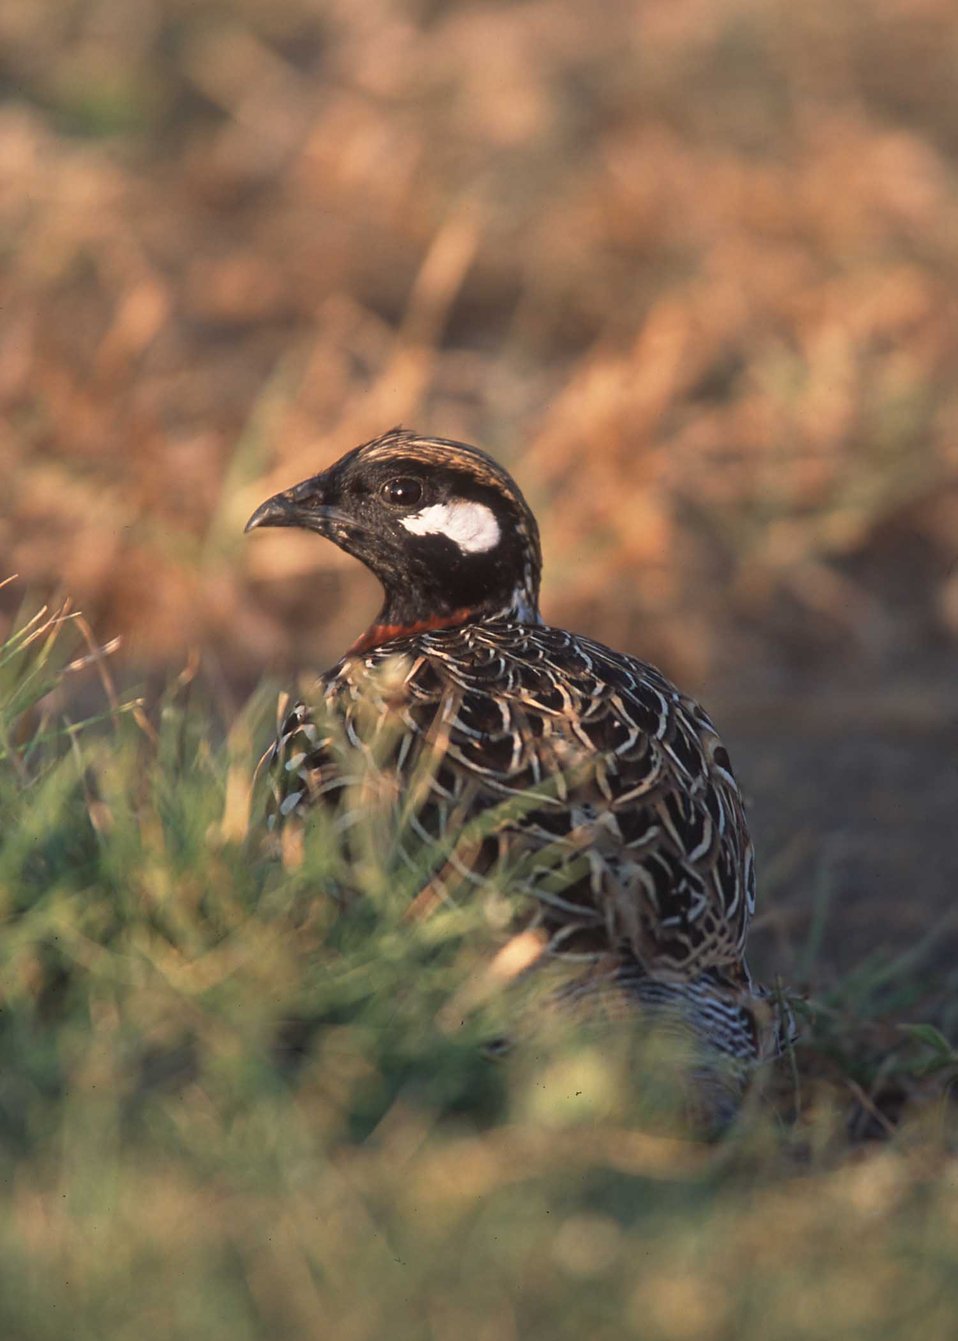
Black francolin bird in Hawaii.